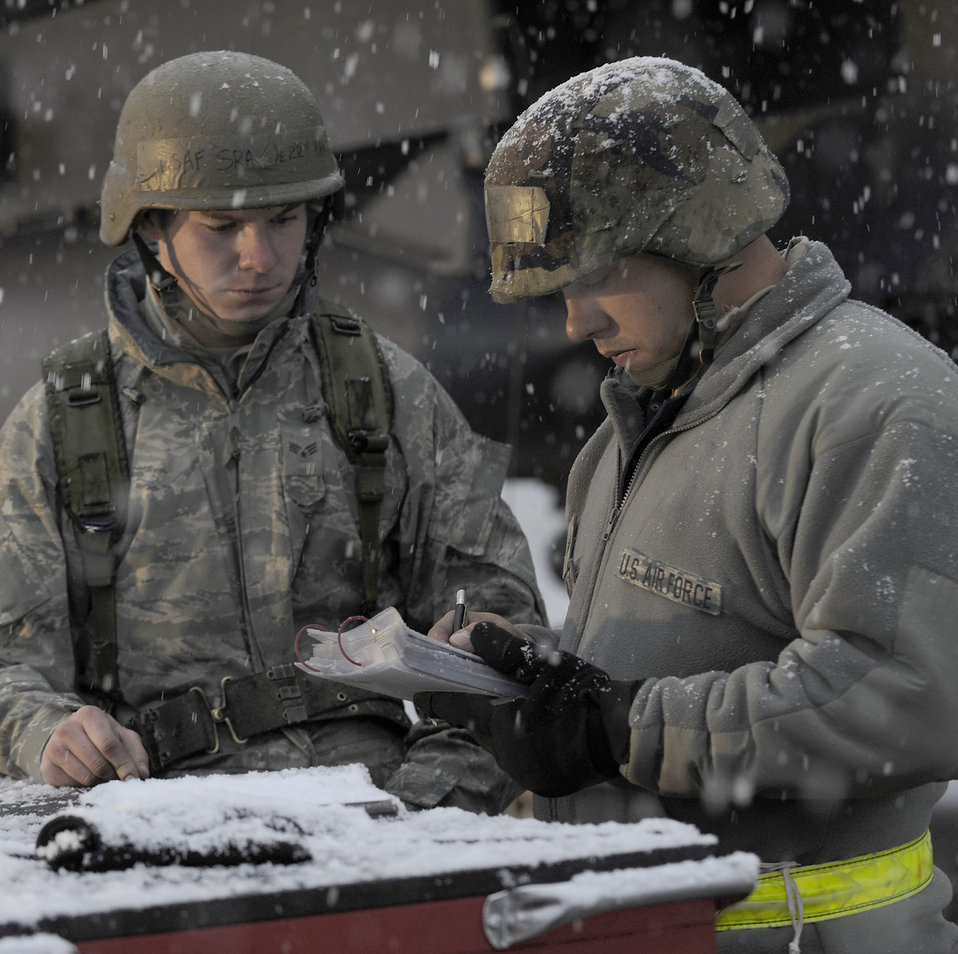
Let it snow

Senior Airman Jerry Haack and Staff Sgt. Peter Sterling review a checklist before continuing maintenance on an F-15E Strike Eagle during an operational readiness exercise Nov. 22, 2010, at Mountain Home Air Force Base, Idaho. The Airmen are assigned to the 366th Aircraft Maintenance Squadron.